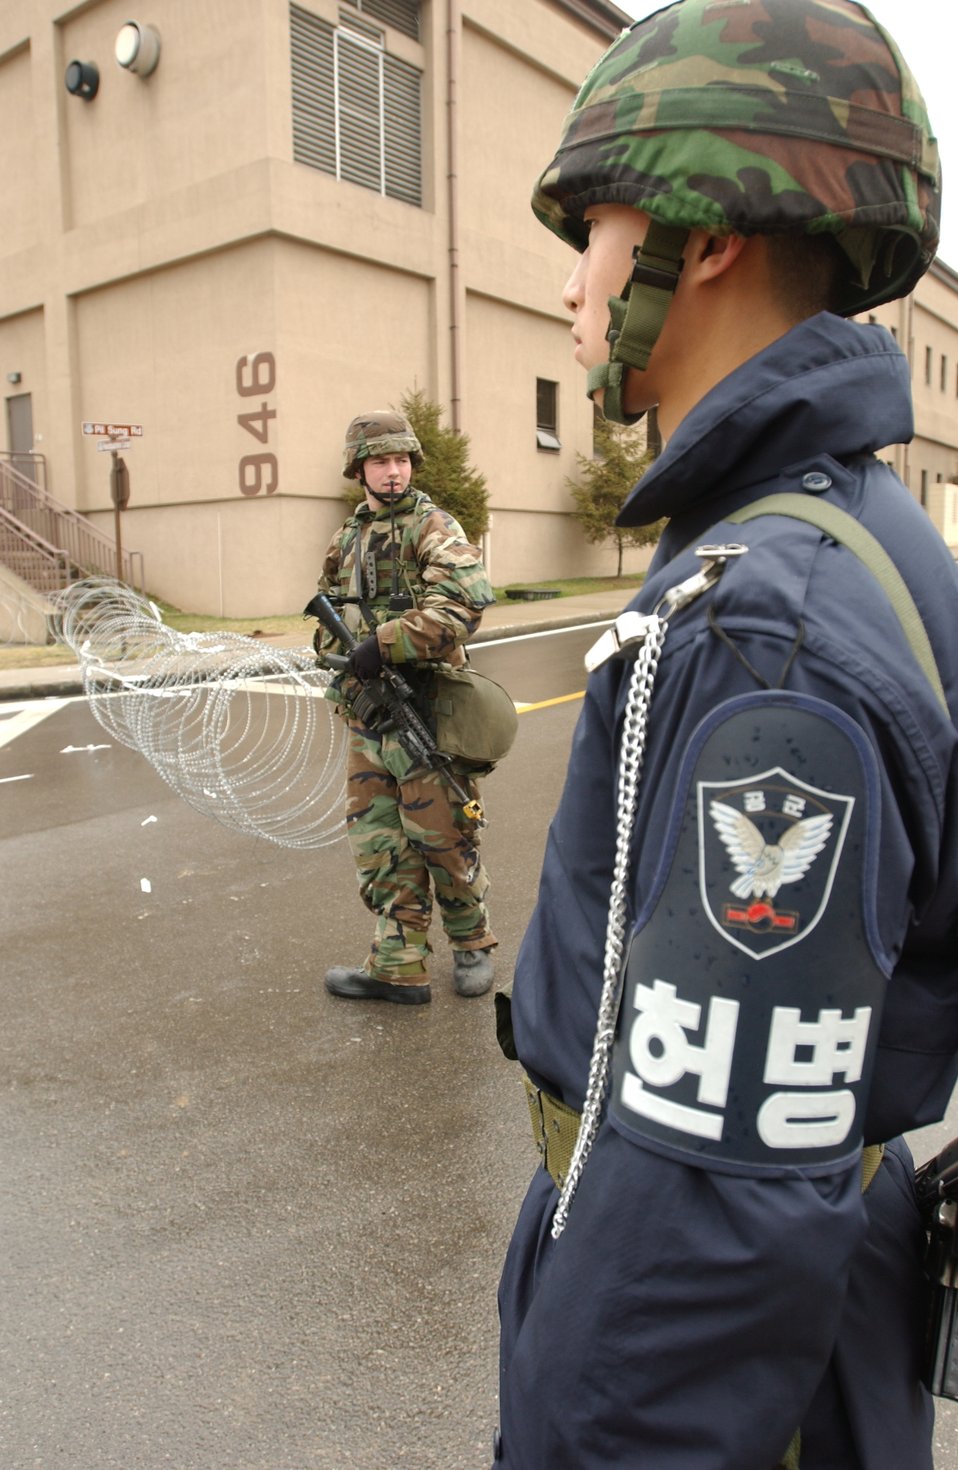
Exercise strengthens alliance

Republic of Korea Airman Kim Young Geung and U.S. Air Force Airman Samuel Lawson guard post 961 during the Reception, Staging, Onward movement, and Integration/Foal Eagle 2007 exercise at Osan Air Base, South Korea. The exercise is an annual joint/combined command post exercise and field training exercise. Airman Lawson is assigned tot he 51st Security Forces Squadron.